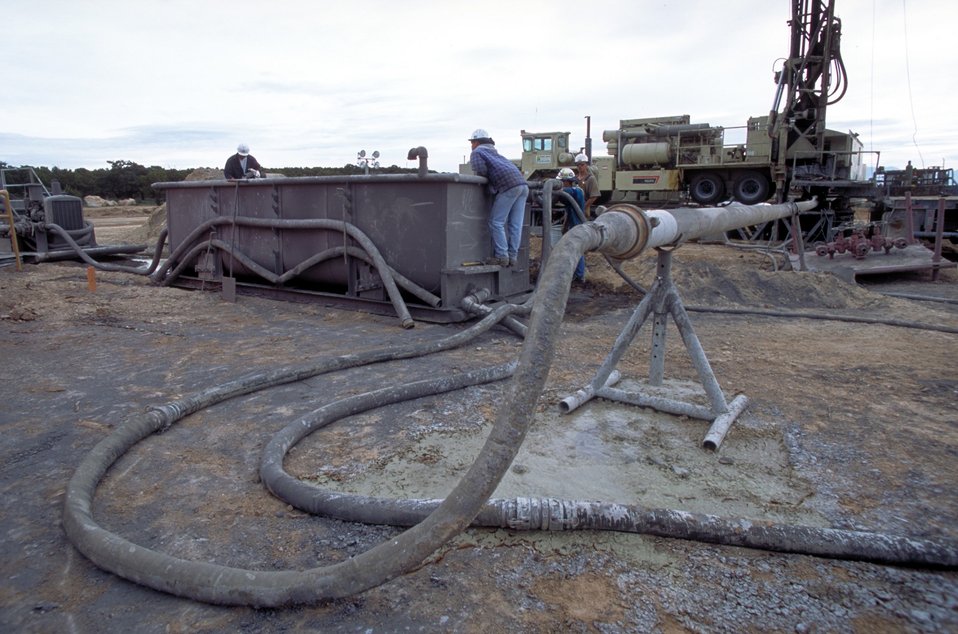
Drilling for coal bed methane near Price, Utah.